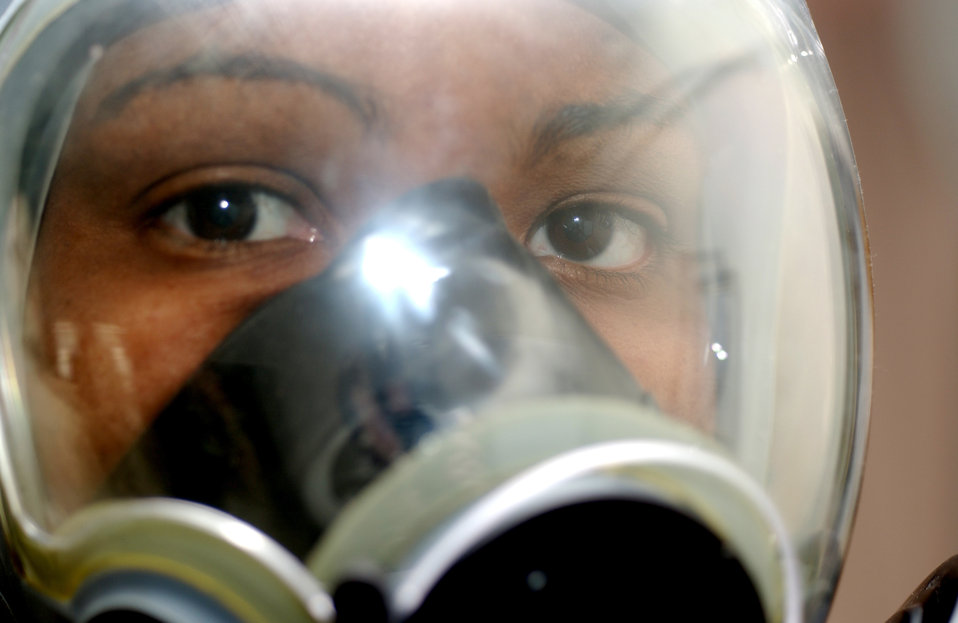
Just looking

SPANGDAHLEM AIR BASE, Germany -- Airman 1st Class Amaani Lyle peers out of her gas mask during a chemical warfare training class here April 6. Airman Lyle is a public affairs specialist with the 52d Fighter Wing.